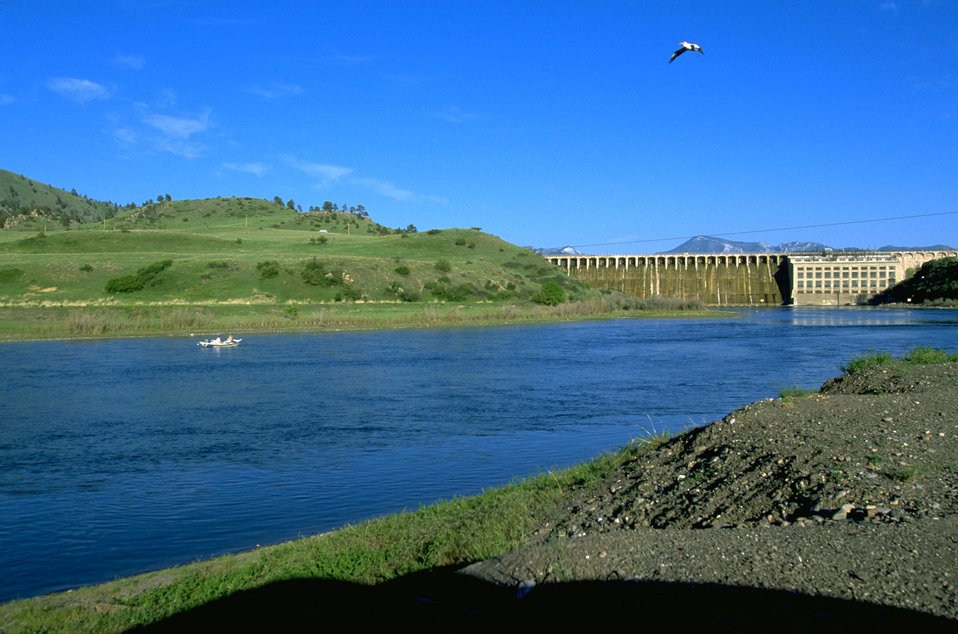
Missouri River with Holter Dam to the right